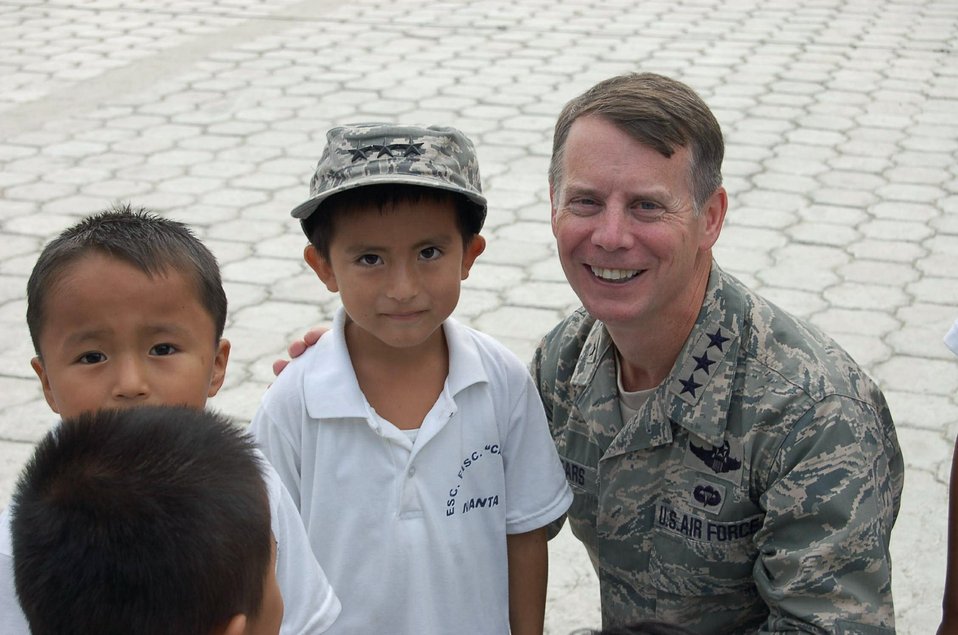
Airmen visit school in Ecuador, donate supplies

Lt. Gen. Glenn F. Spears gets acquainted with students from the San Juan Elementary School Dec. 10 in San Juan, Ecuador. The general presented a donation certificate for $6,000 in school supplies to the school's director in front of the nearly 330 children enrolled. General Spears is the Southern Command deputy commander.